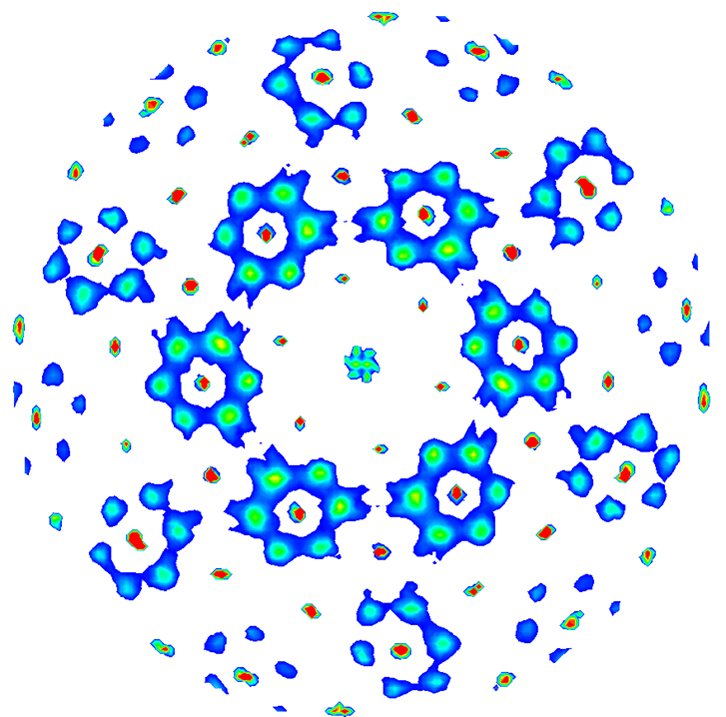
Honeycomb-based Nanostructure

Data taken with synchrotron diffraction indicates a short range, honeycomb-based nanostructure, which is the basis for the anomalous magnetism of Ba3CuSb2O9. NCNR neutron scattering data confirmed this structure and provided evidence for the resulting quantum spin liquid.